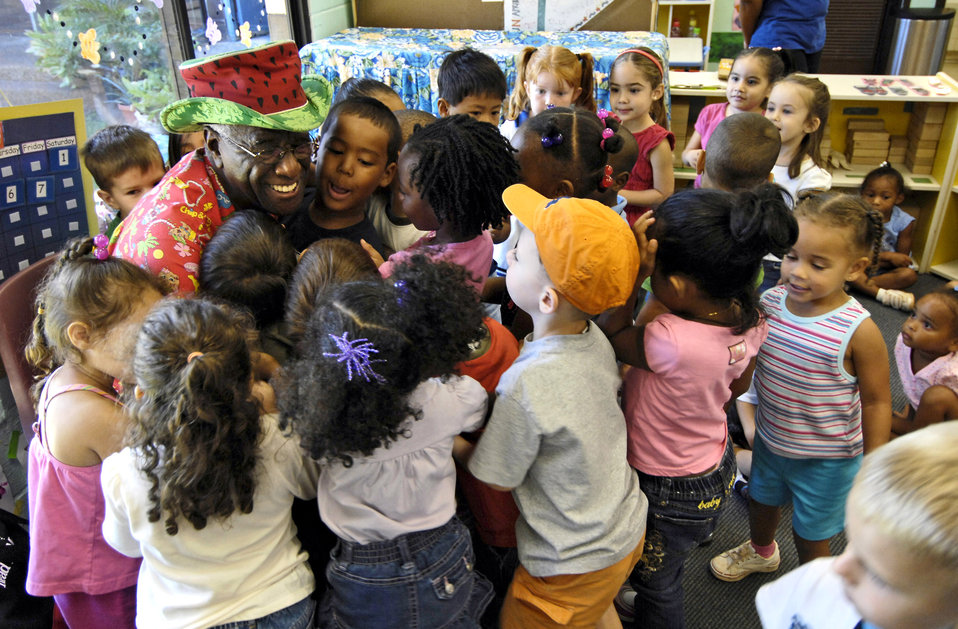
Hugs for the cookie man

Wally